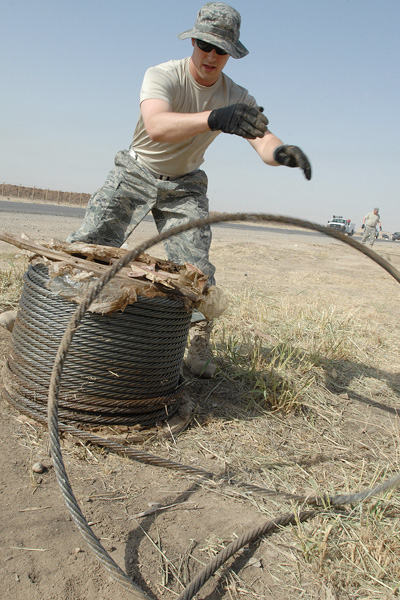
Volunteers create safety barrier

Staff Sgt. Seth Clark uncoils aircraft cable on June 5 near the Kirkuk Air Base, Iraq, flightline. Airmen teamed up to place barriers, cables and signs around the airfield, mitigating vulnerabilities. This self-help airfield security project saved an estimated $500,000 by using existing assets and volunteers. Sergeant Clark is the chaplain's assistant with the 506th Air Expeditionary Group Expeditionary Chapel, and is deployed from Goodfellow Air Force Base, Texas.